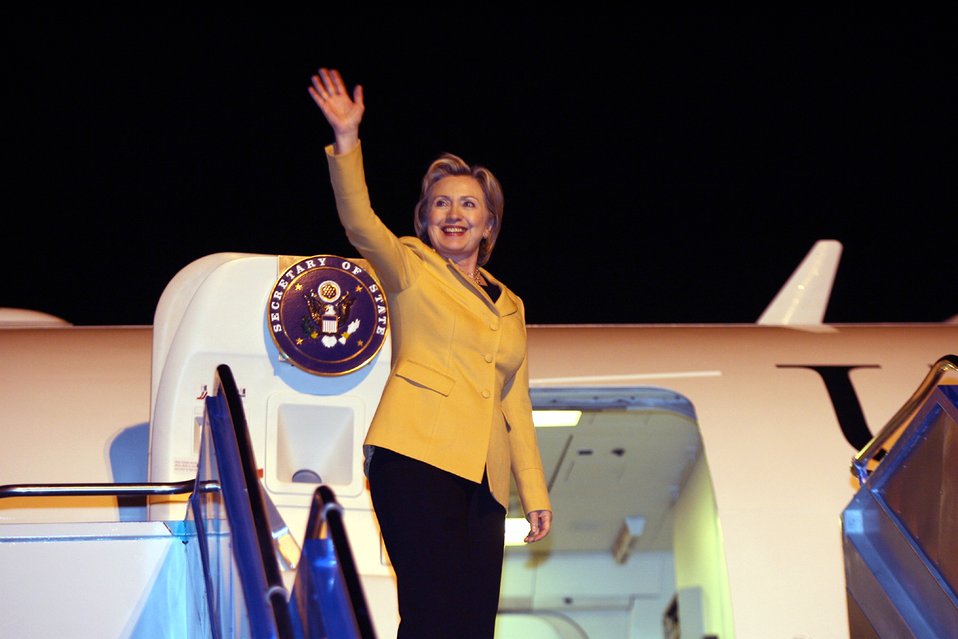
Wave Farewell in Ankara

U.S. Secretary of State Hillary Rodham Clinton waves farewell at Esenboga Airport, Ankara, Turkey March 7, 2009.